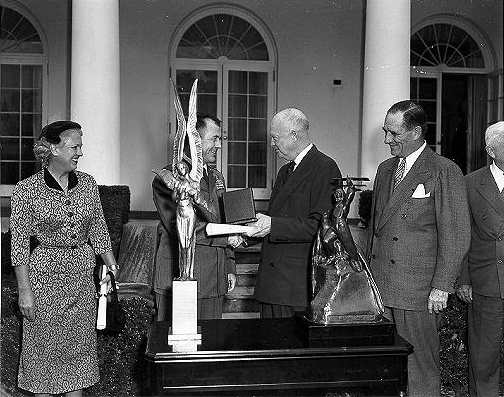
Jackie Cochran and Chuck Yeager being presented with the Harmon International Trophies by President Dwight D. Eisenhower.